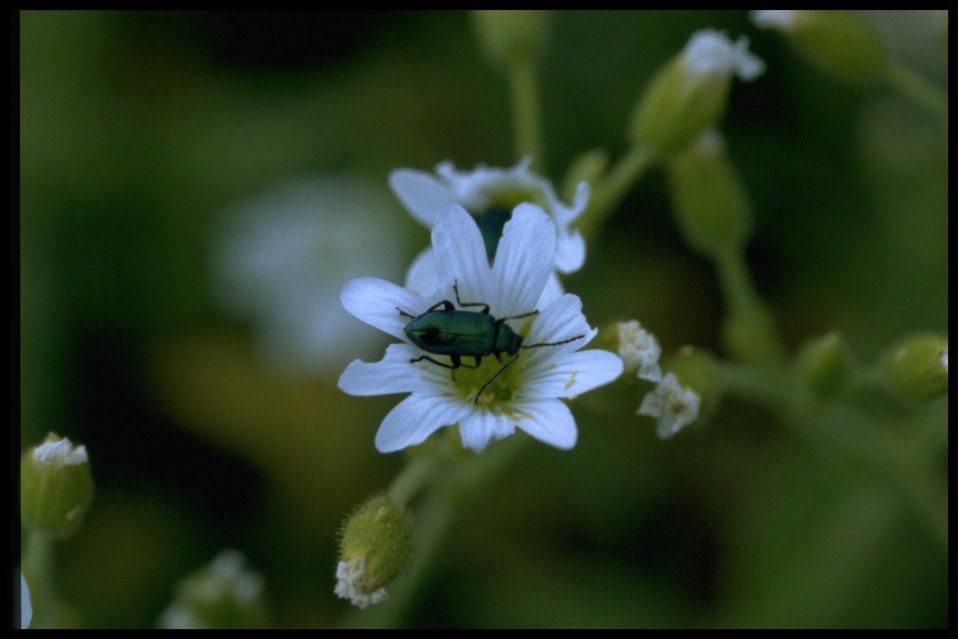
Closeup shot of wildflower (genus Cerastium).